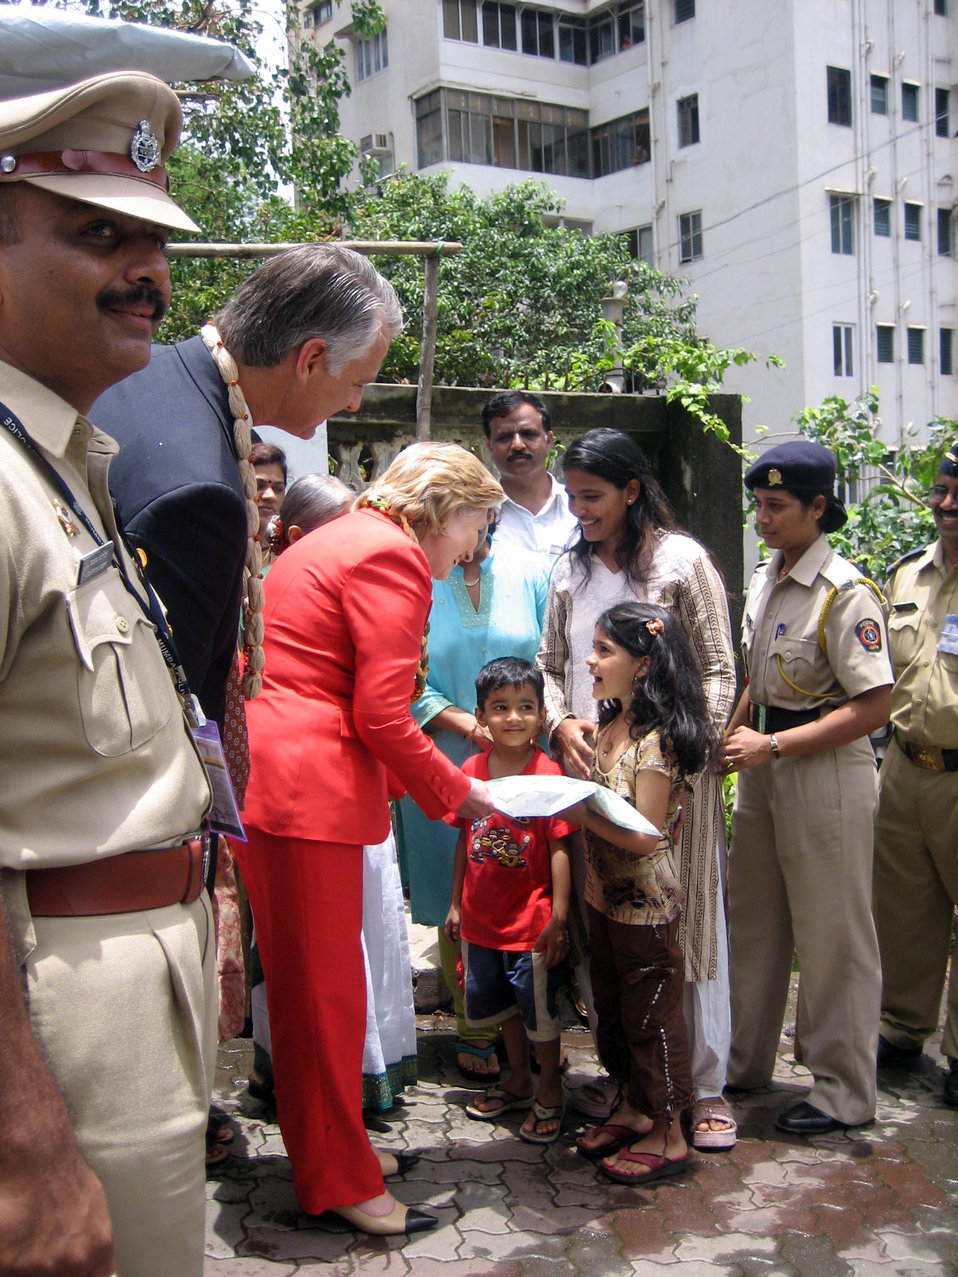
Secretary Clinton Visits SEWA Hansiba Outlet

Sonal Mehta and 2 children present a gift (a decorative Indian shawl) to U.S. Secretary of State Hillary Rodham Clinton in Mumbai, India July 18, 2009.